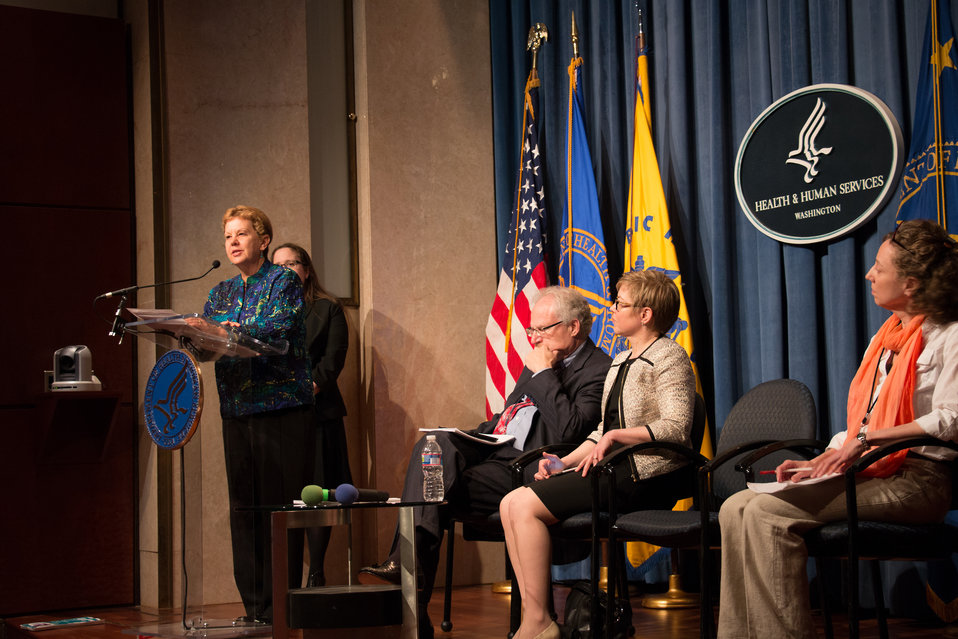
VHAP Launch (224 of 511)